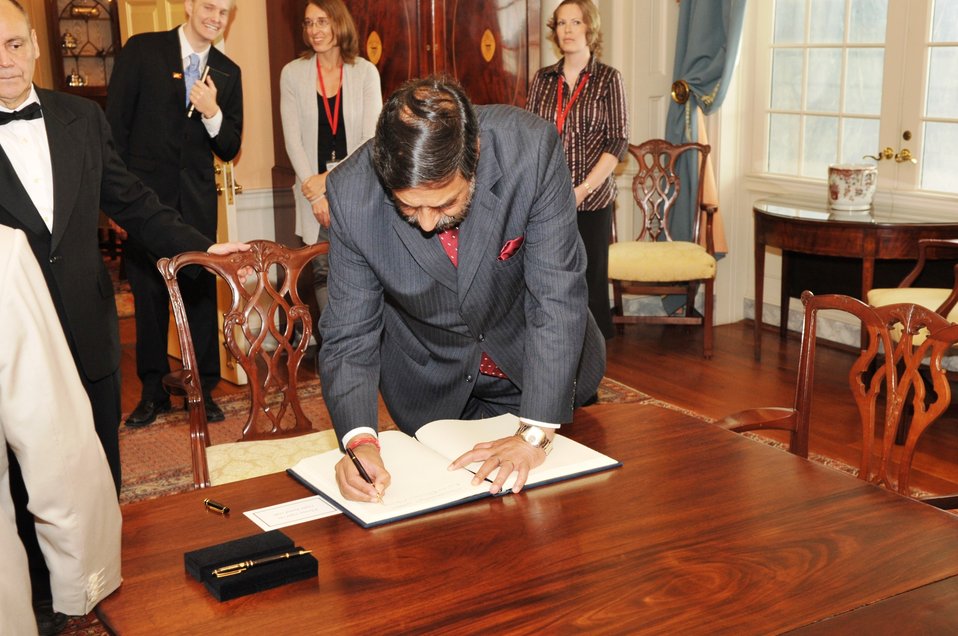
Indian Commerce Minister Sharma Signs the Guest Book

Indian Commerce Minister Anand Sharma signs the U.S. Secretary of State's Guest Book at the U.S. Department of State on June 22, 2010.